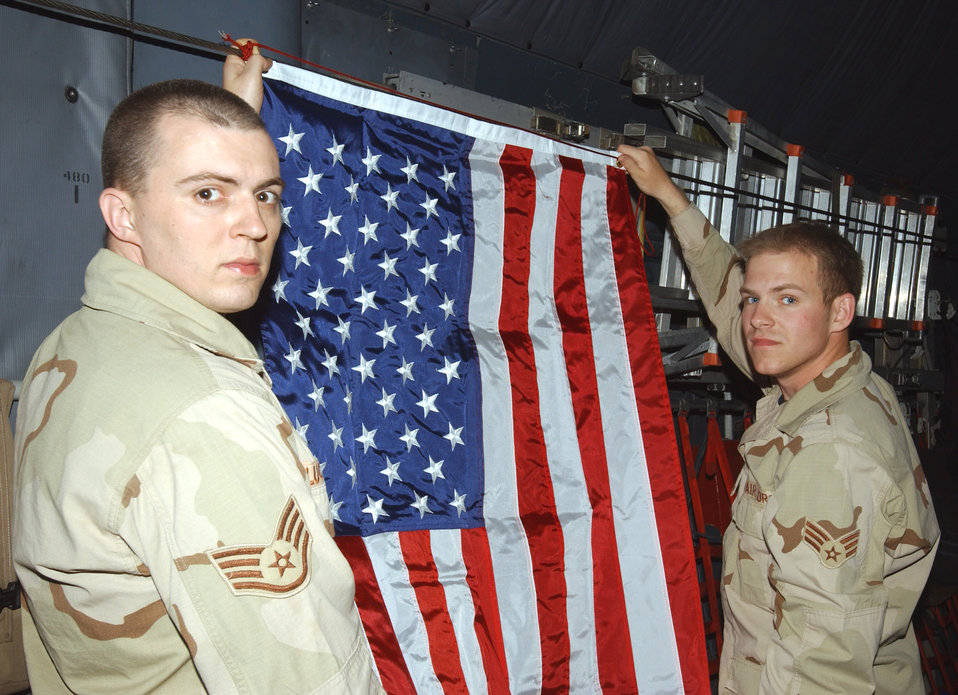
Never forgotten

OVER IRAQ -- Staff Sgt. Kevin Lucius, left, and Senior Airman Donald Cook hang a United States Flag aboard a C-130 Hercules on March 31 in memory of a fallen Airman from their home base of Royal Air Force Base Mildenhall, England. Staff Sgt. Lucius and Senior Airman Cook both deployed to the 407th Expeditionary Communications Squadron at Tallil Air Base, Iraq.